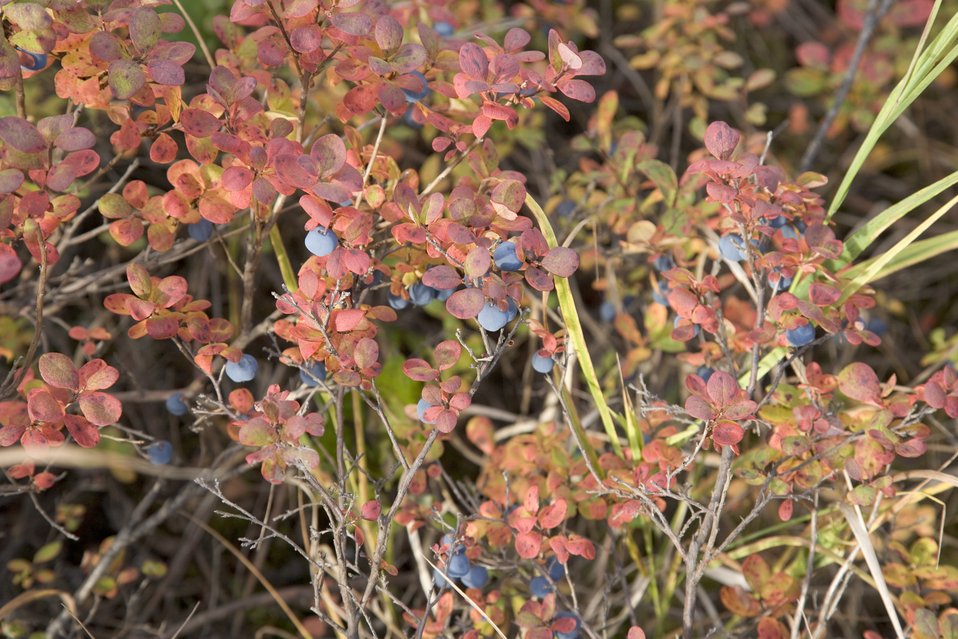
Blueberries

USFWS Yukon Delta NWR